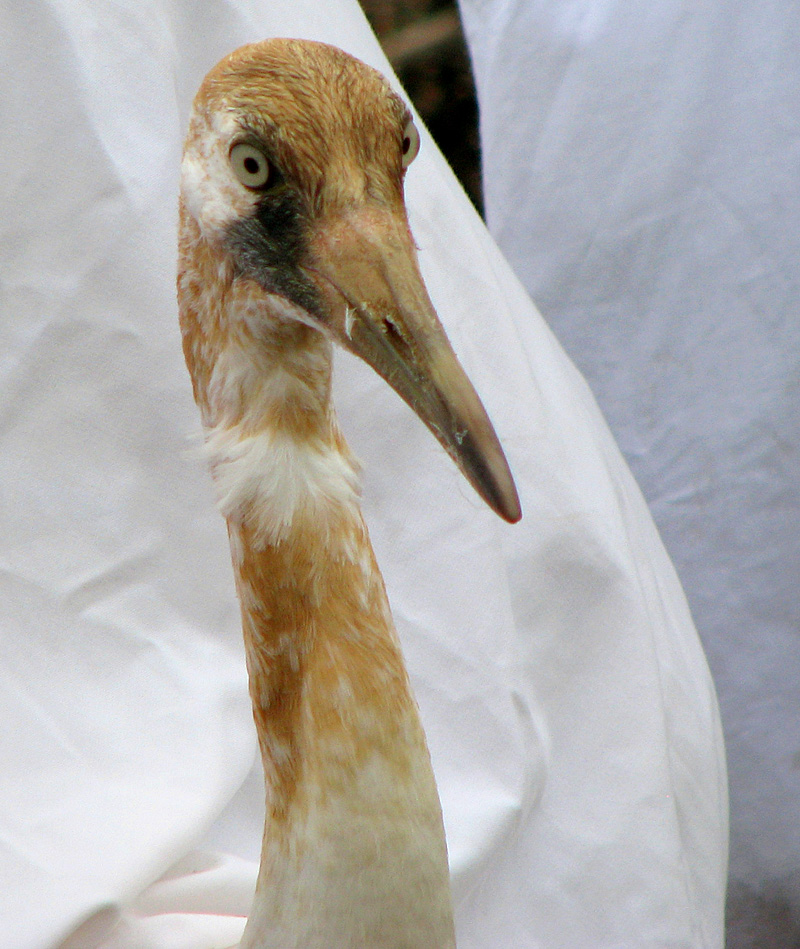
Juvenile Whooper Ready for Release

Juvenile ready for release into the top-netted pen.